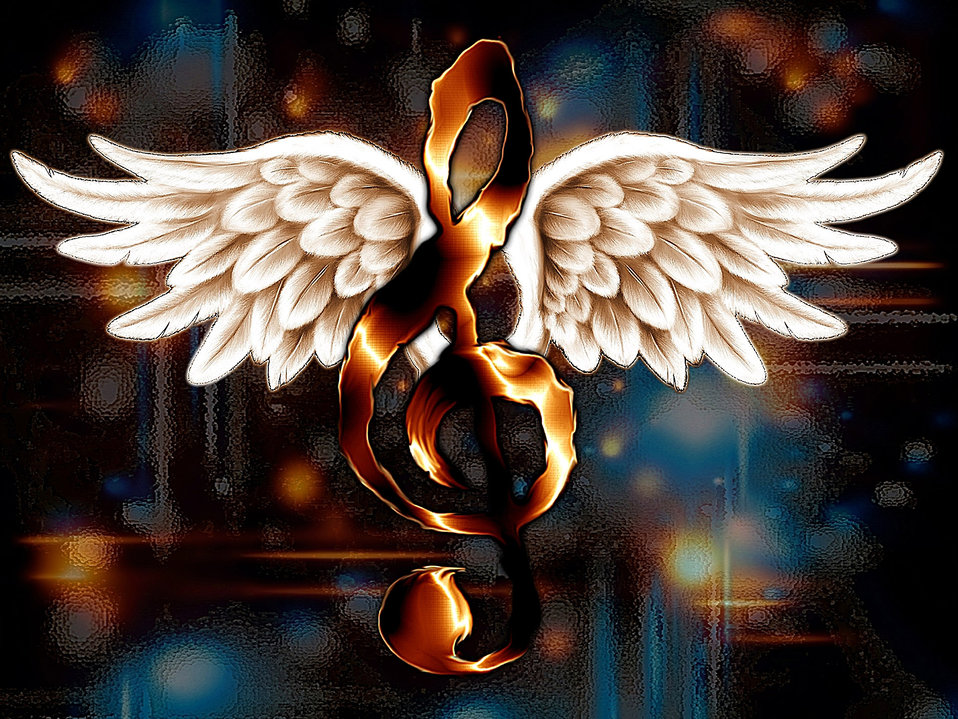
Music gives you wings

Background for monica.